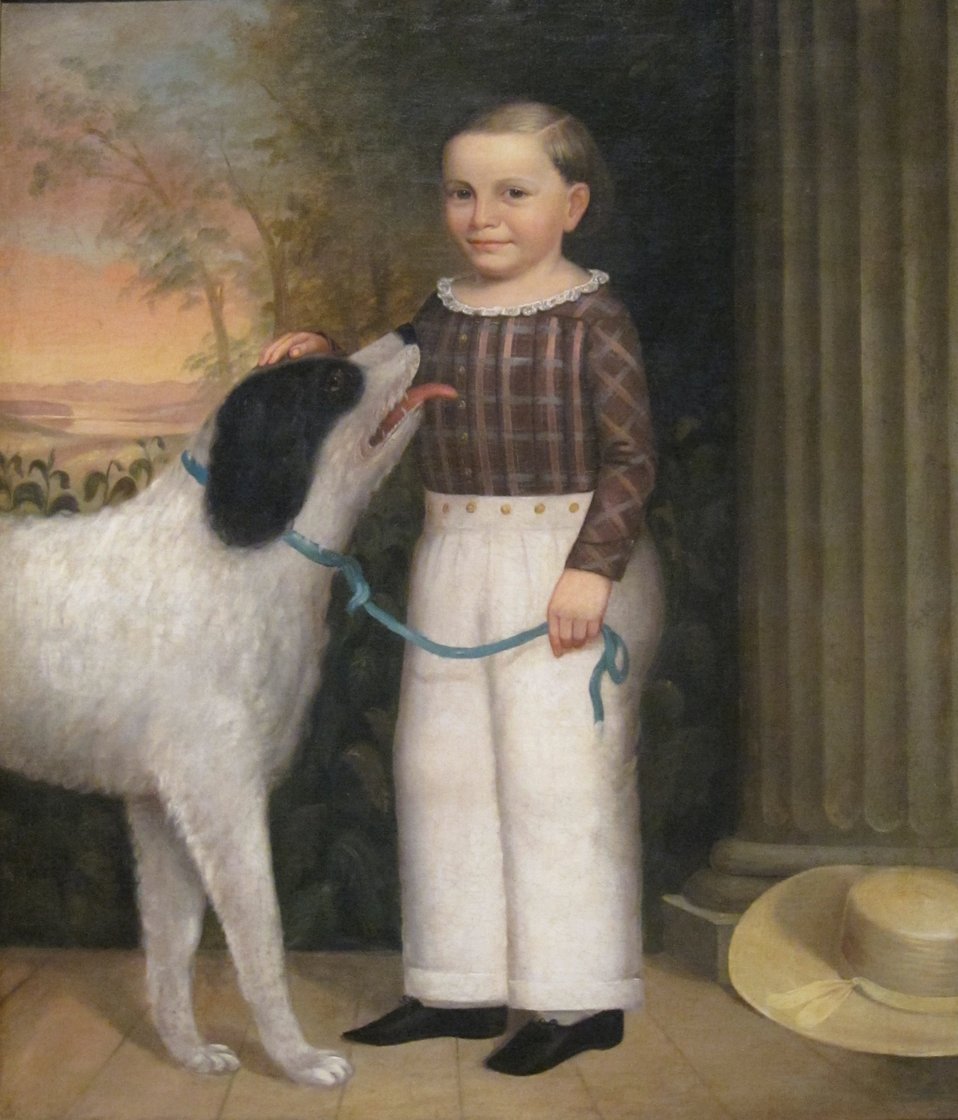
'Boy with Dog' by Charles Soule, Jr., Dayton Art Institute